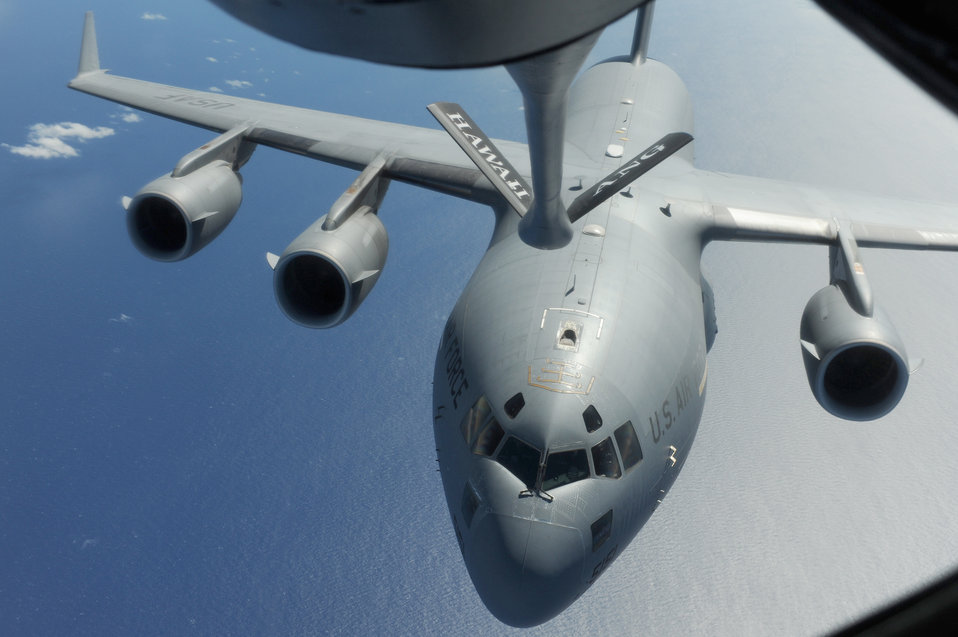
C-17 refuels over the Pacific

A C-17 Globemaster III gets ready to receive fuel from a KC-135 Stratotanker Sept. 18, 2010, over the Pacific Ocean during a Total Force partnership mission to Andersen Air Base, Guam. The C-17 is assigned to the 15th Wing at Joint Base Pearl Harbor-Hickam, Hawaii, and the KC-135 is from a Hawaii Air National Guard's 204th Air Refueling Squadron.